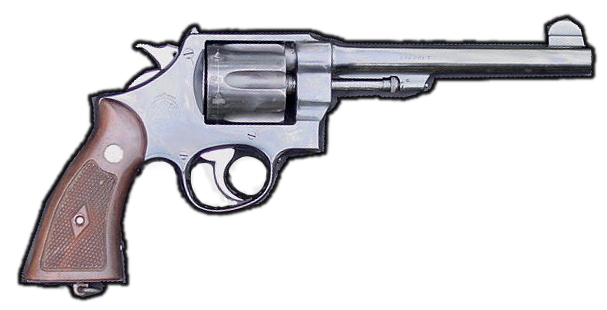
Smith and Wesson New Century Gold Seal 'Triple Lock'